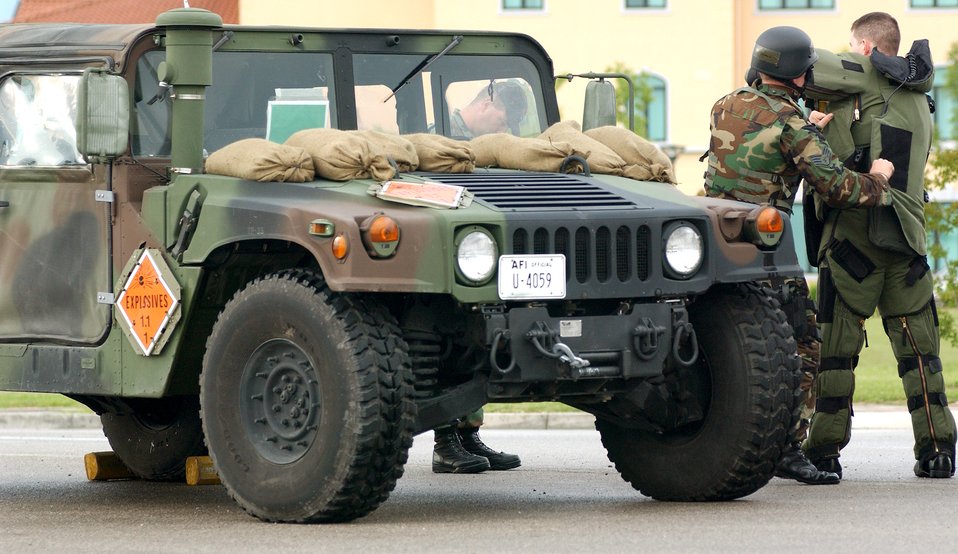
Heavy-duty gear

Staff Sgt. Clayton Tiemen helps Staff Sgt. Justin Surran gear up in a bomb suit at Aviano Air Base, Italy, on Tuesday, June 6, 2006, during a Local Salty Nation training exercise. The heavy-duty Kevlar suit weighs 70 pounds and is used to protect explosive ordnance disposal troops. The NCOs are assigned to the 31st Civil Engineer Squadron.